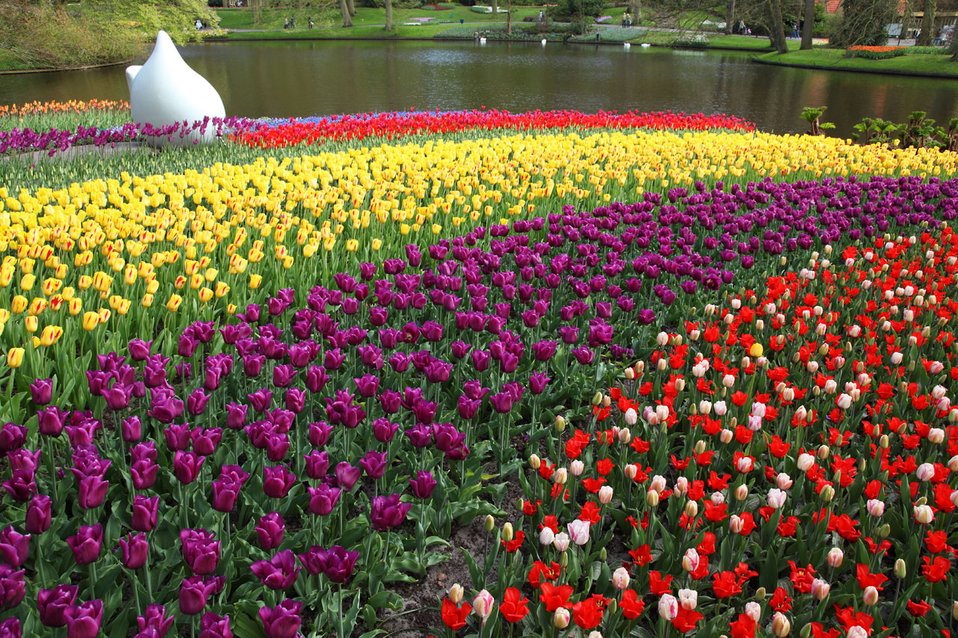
Colorful tulips in keukenhof

Colorful tulips with lake in background in keukenhof.